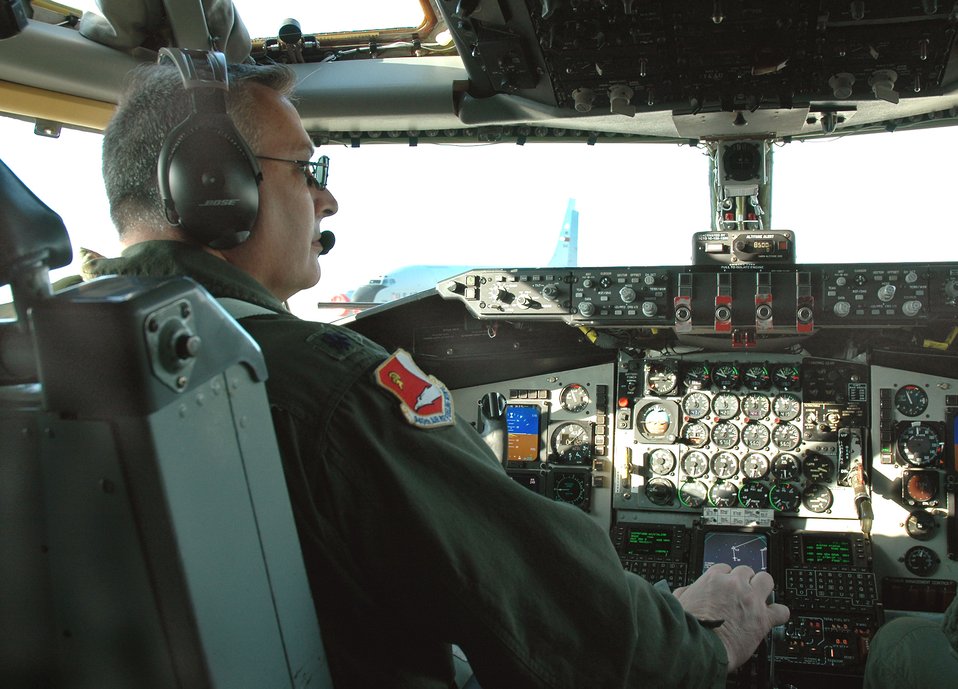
Toping up the Extender

Air Force Reservist Lt. Col. Jonathan Philebaum, 940th Air Refueling Wing pilot, prepares to taxi a KC-135 Stratotanker onto the runway at Beale Air Force Base, Calif. for an air-to-air refueling training mission Jan. 3, 2007.